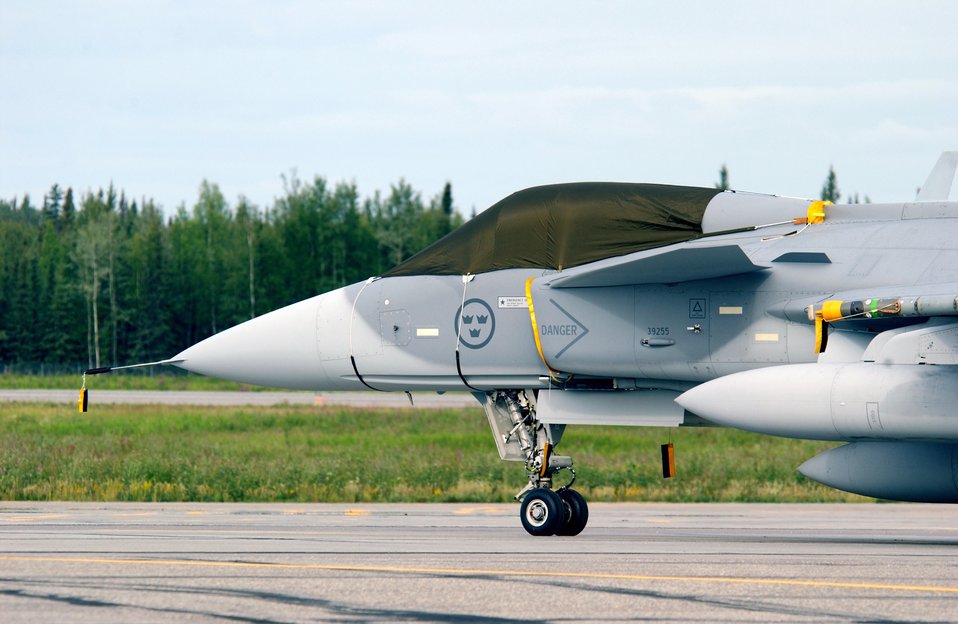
Cooperative Cope Thunder 2006

A JAS 39 Gripen from the Swedish Air Force's Tango Red unit based at Malmen Air Base, Sweden, sits on the flightline at Eielson Air Force, Alaska, on July 18 in preparation for Cooperative Cope Thunder 2006. The combined joint air training exercise provides scenarios that are as realistic as combat within the constraints of the training environment.